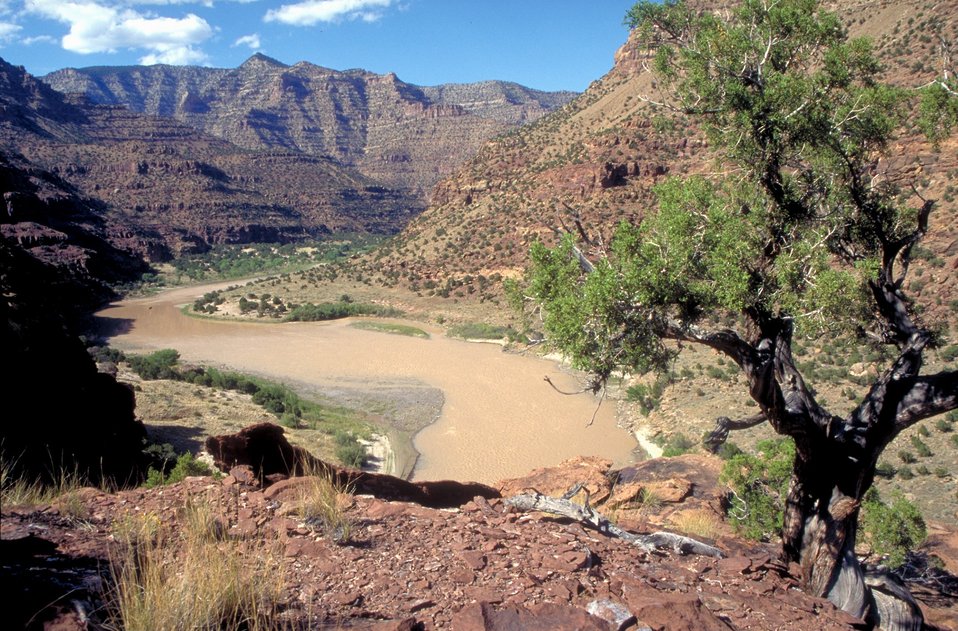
Desolation/Gray Canyons near Price, Utah.